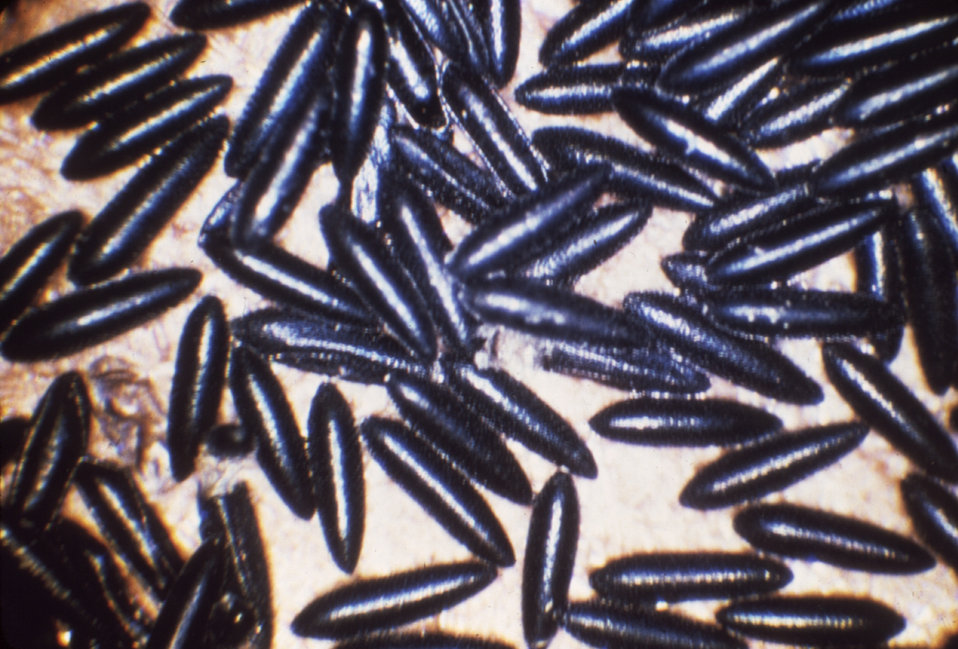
This photograph shows numerous eggs of the dengue fever mosquito vector, Aedes aegypti.